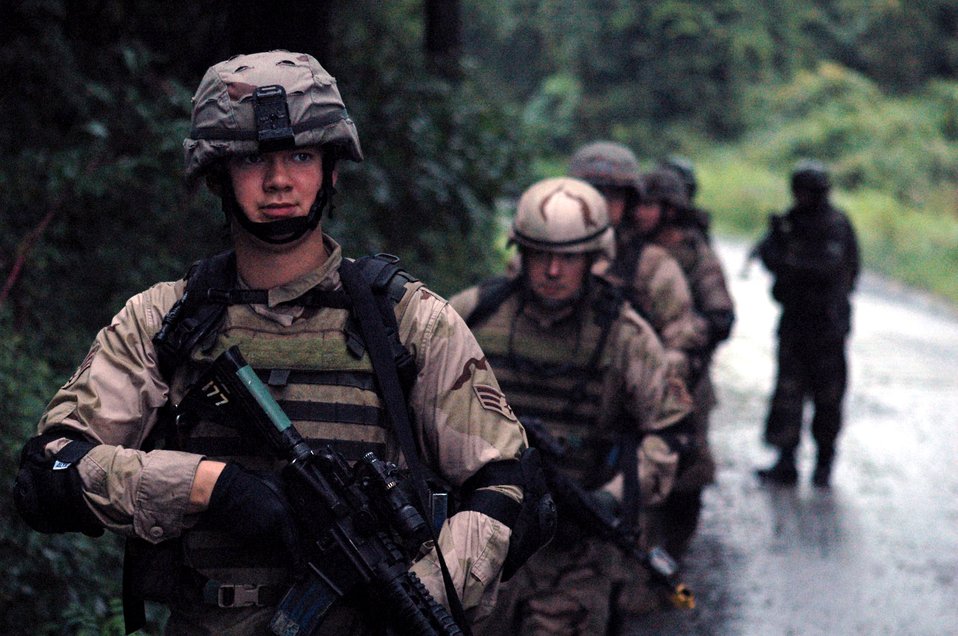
After one year, Phoenix Warrior course soaring high

Students in the Air Force Phoenix Warrior Training Course 07-6 conduct a dismounted patrol during training Aug. 21 on a range at Fort Dix, N.J. The course is taught by the U.S. Air Force Expeditionary Center's 421st Combat Training Squadron where Air Force security forces Airmen practice expeditionary combat skills.